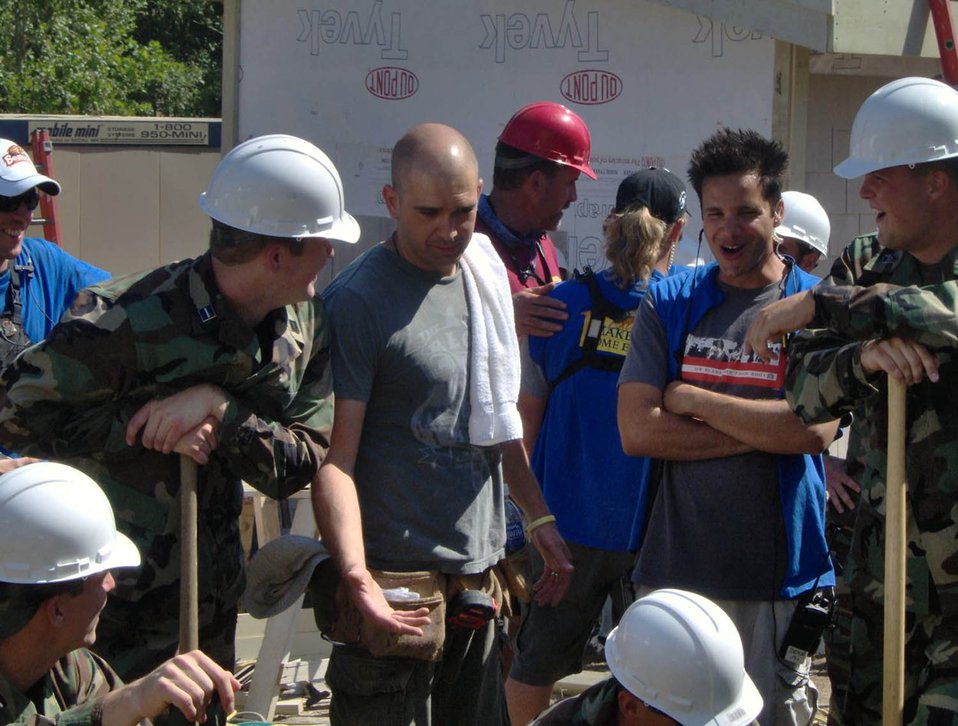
Oregon ROTC cadets go to the extreme

Cadets from AFROTC Detachment 695, University of Portland, and Detachment 685, Oregon State University, take a break from digging the Koi pond July 26 for the Byer family of Lewisburg, Ore, as Ed Sandersof ABC's